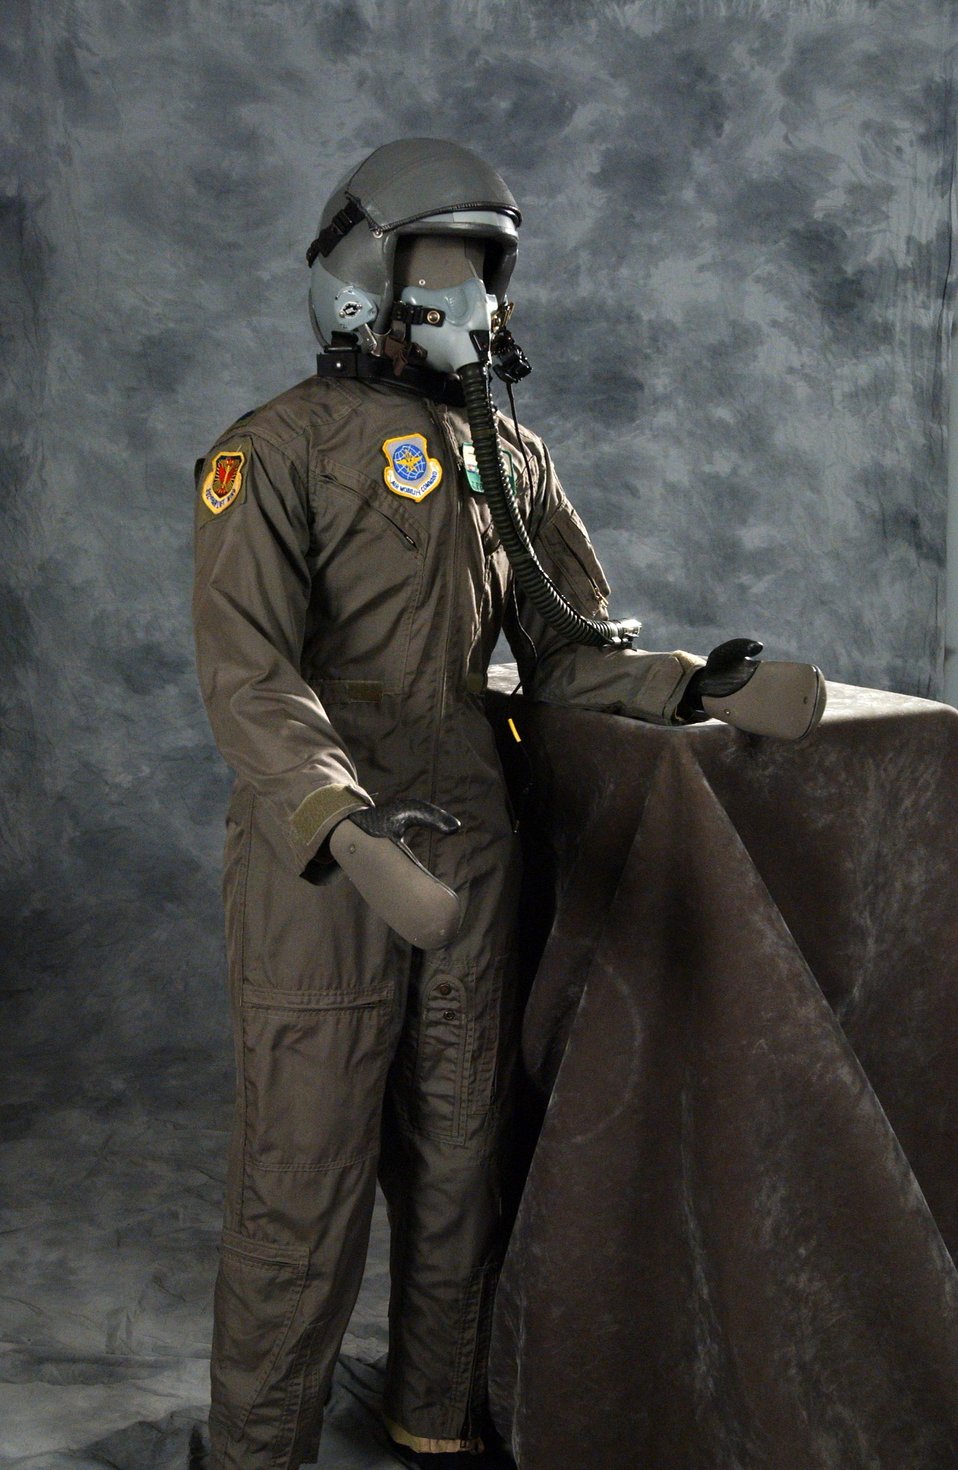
AT NREL, ADAM (ADVANCED AUTOMOTIVE MANIKIN) IS USED TO ASSESS HUMAN THERMAL COMFORT.

ADAM is designed to evaluate human physiological response to transient, non-homogeneous thermal conditions. His sensors measure skin temperature and core temperature changes and he sweats just like a human would in the same conditions. This allows researchers to evaluate advanced climate control systems and physiological responses to wearing protective suits.